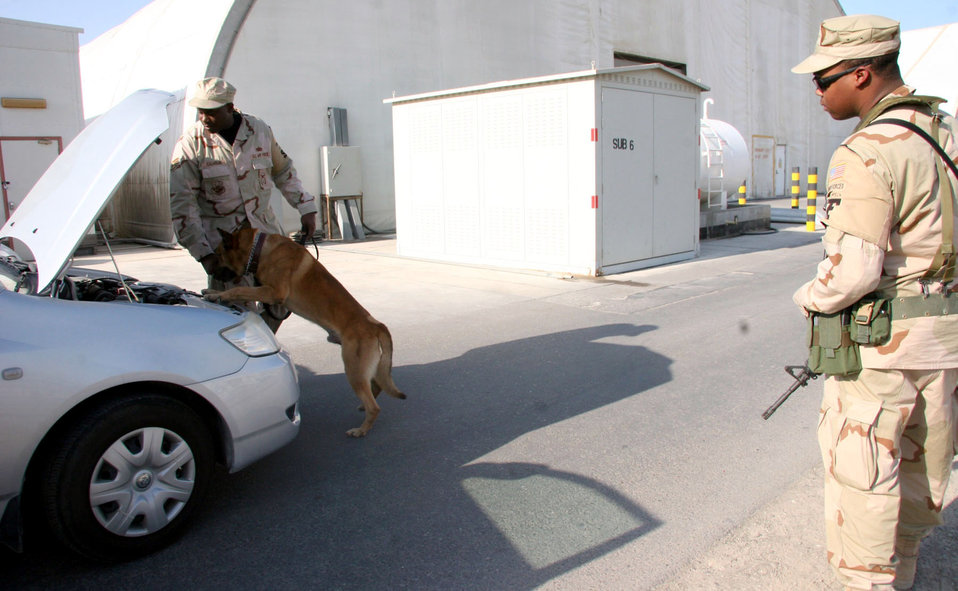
Brothers spent first deployment together

Staff Sgt. Malik Calhoun, 380th Expeditionary Security Forces Squadron K-9 handler, and Arco, his Belgian Malinois patrol and explosive detection dog, search under the hood of a car during a vehicle sweep while his brother Airman 1st Class Dandre Bufford, 380th ESFS provides overwatch during an explosive detection training scenario Nov. 27.